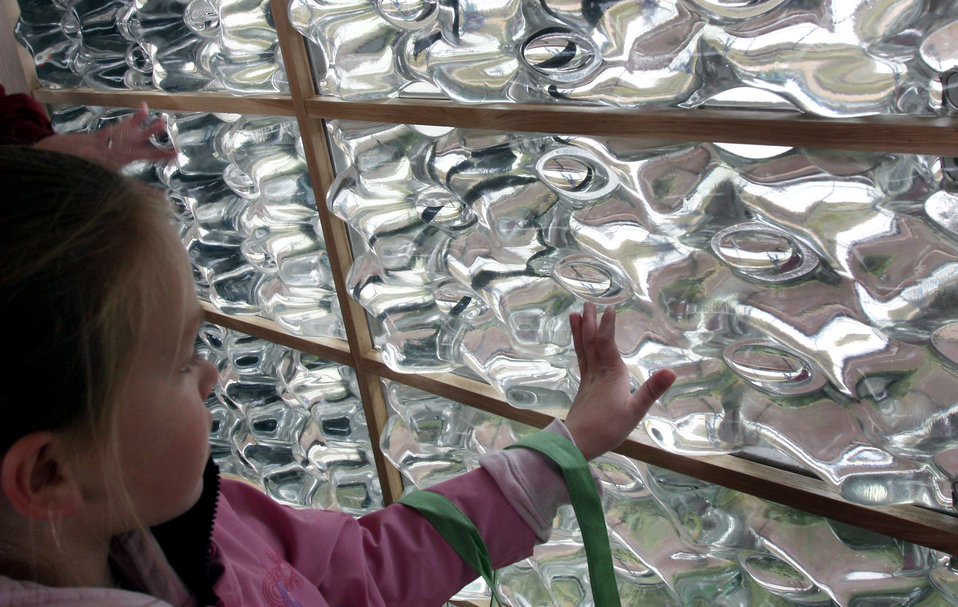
A visitor touches a passive-heating water wall made of recycled plastic water bottles - Arizona University solar-powered house during the U.S Department of Energy Solar Decathlon on the National Mall in Washington, DC, October 17, 2009.

The U.S. Department of Energy Solar Decathlon, features energy-efficient, solar-powered houses built by 20 university teams from North American and Europe.